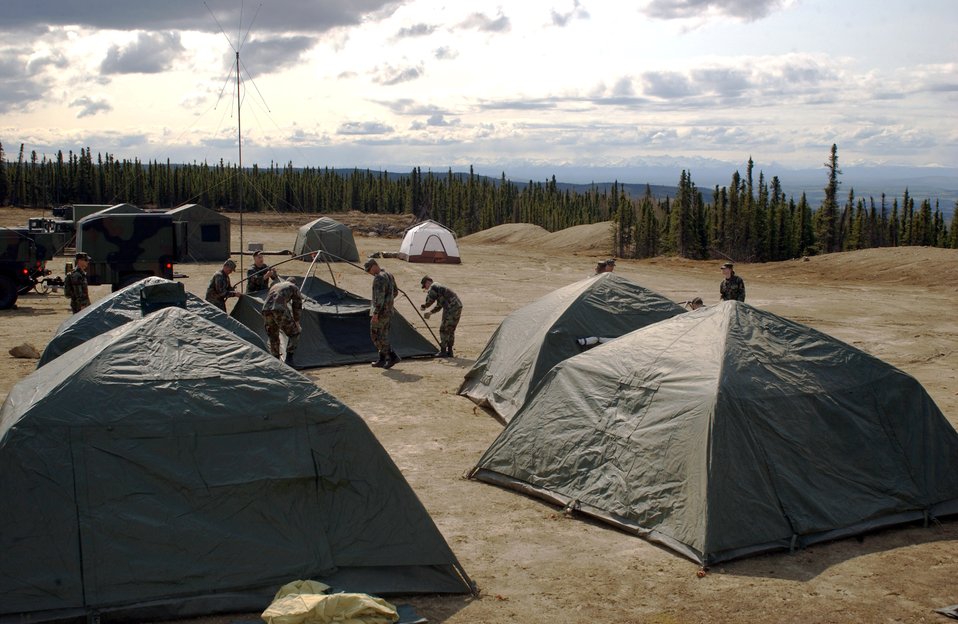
Practice makes perfect during Ursa Minor

Airmen from the 3rd Air Support Operations Squadron at Eielson Air Force Base, Alaska, set up base camp in the Yukon training area May 15 during Operation Ursa Minor. The three-day field training exercise is designed to provide hands-on combat training and experience to Airmen before they deploy to a combat area.